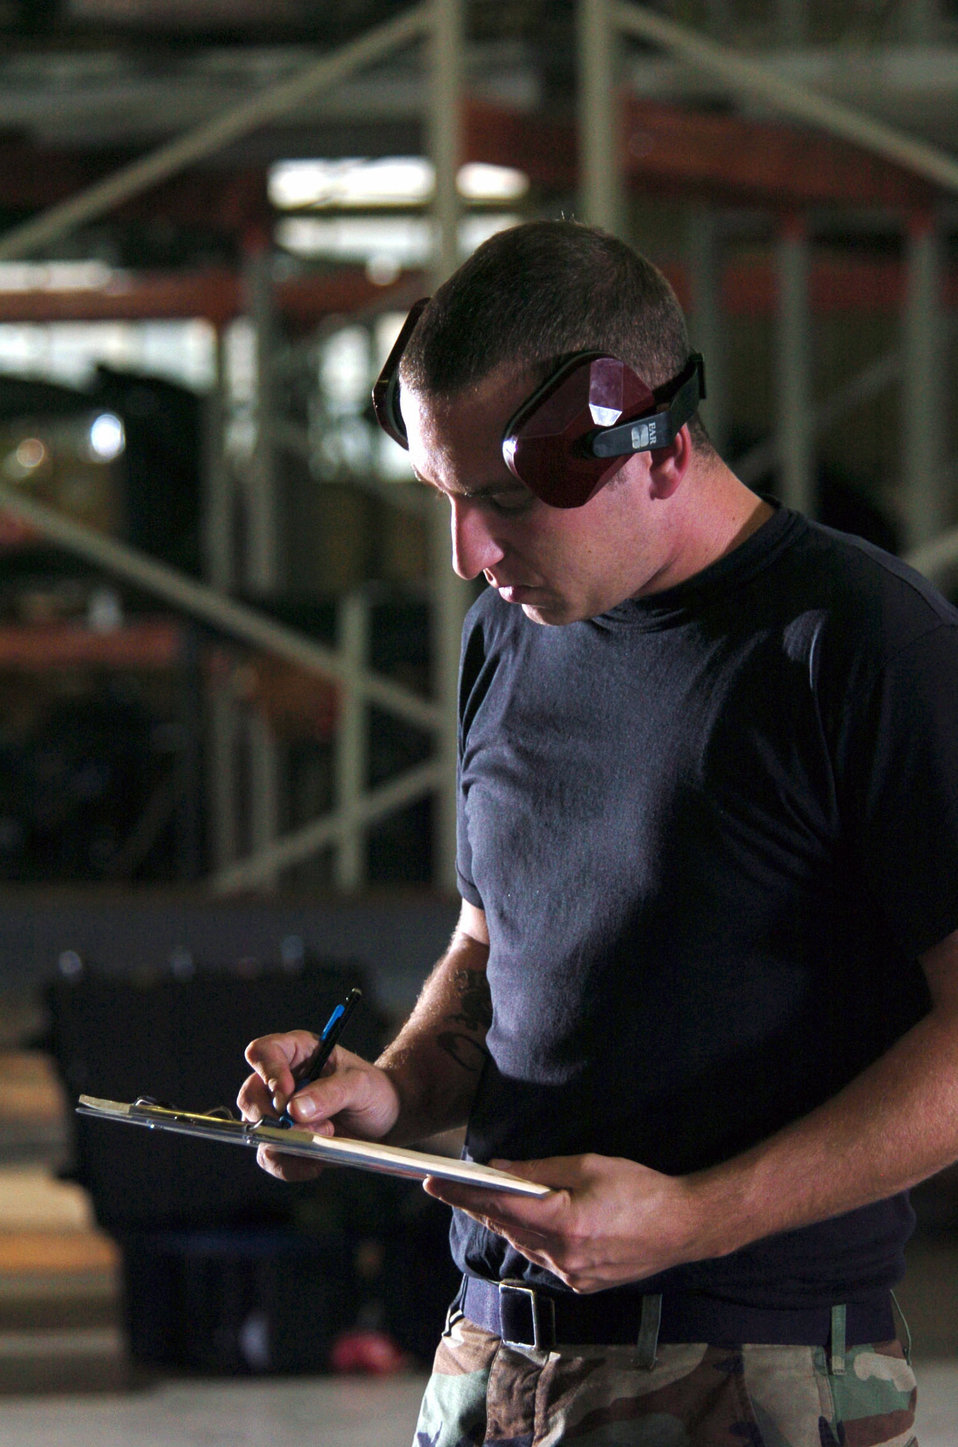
Checking the list

YOKOTA AIR BASE, Japan -- Senior Airman Michael Gullett reads a checklist before using a forklift in preparation for an operational readiness exercise here Nov. 1. Airman Gullett is a petroleum, oil and lubricant journeymen assigned to the 374th Logistics Readiness Squadron.